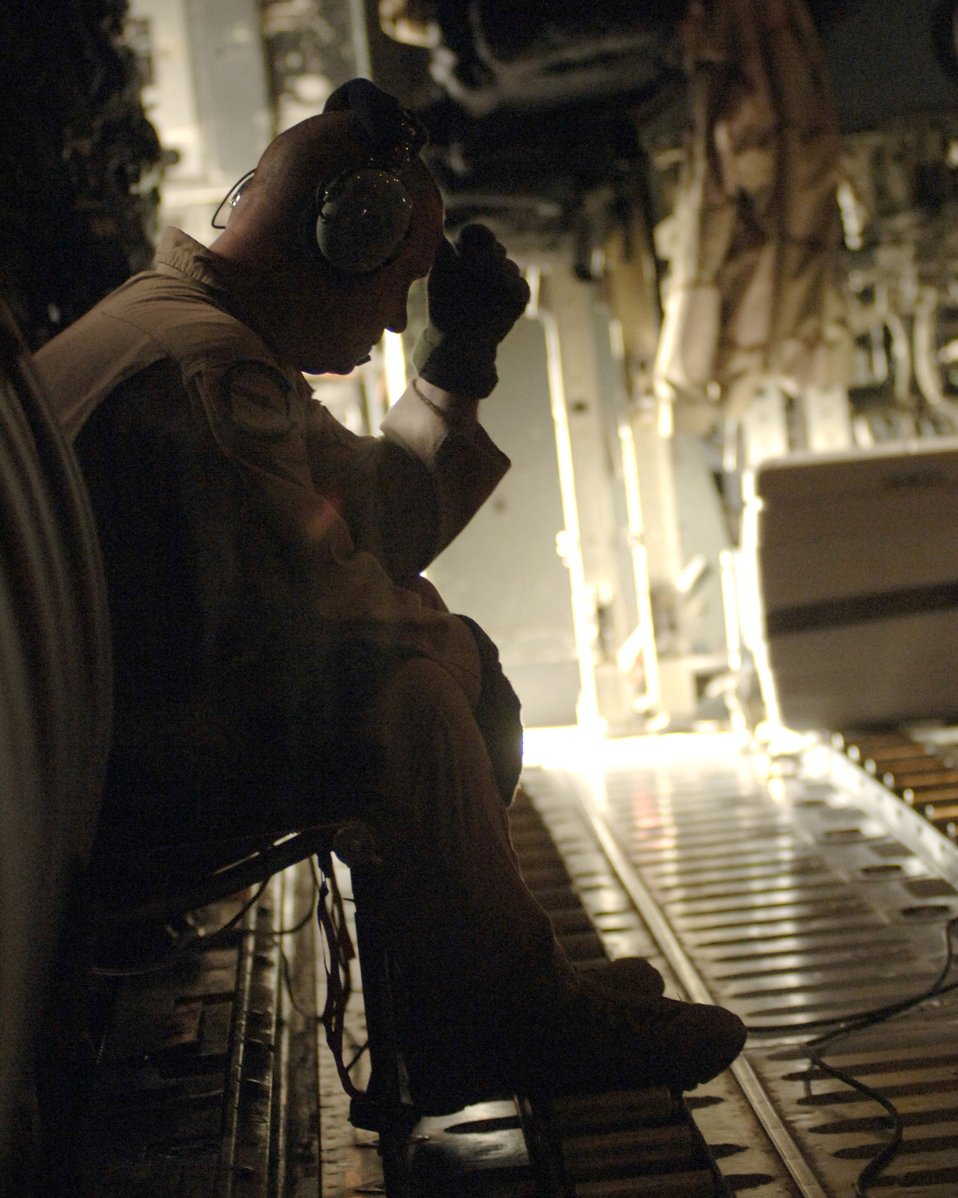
Leaflet airdrop mission delivers clear message to Taliban

Master Sgt. Jim Read, a C-130 Hercules loadmaster, mentally prepares himself for his first warning leaflet airdrop mission March 6 over the southeastern mountains of Afghanistan. The leaflet airdrop mission is contributing to Operation Achilles, launched by International Security Assistance Force, to create an environment that will enable the government of Afghanistan to help improve security and the Afghan people's quality of life.